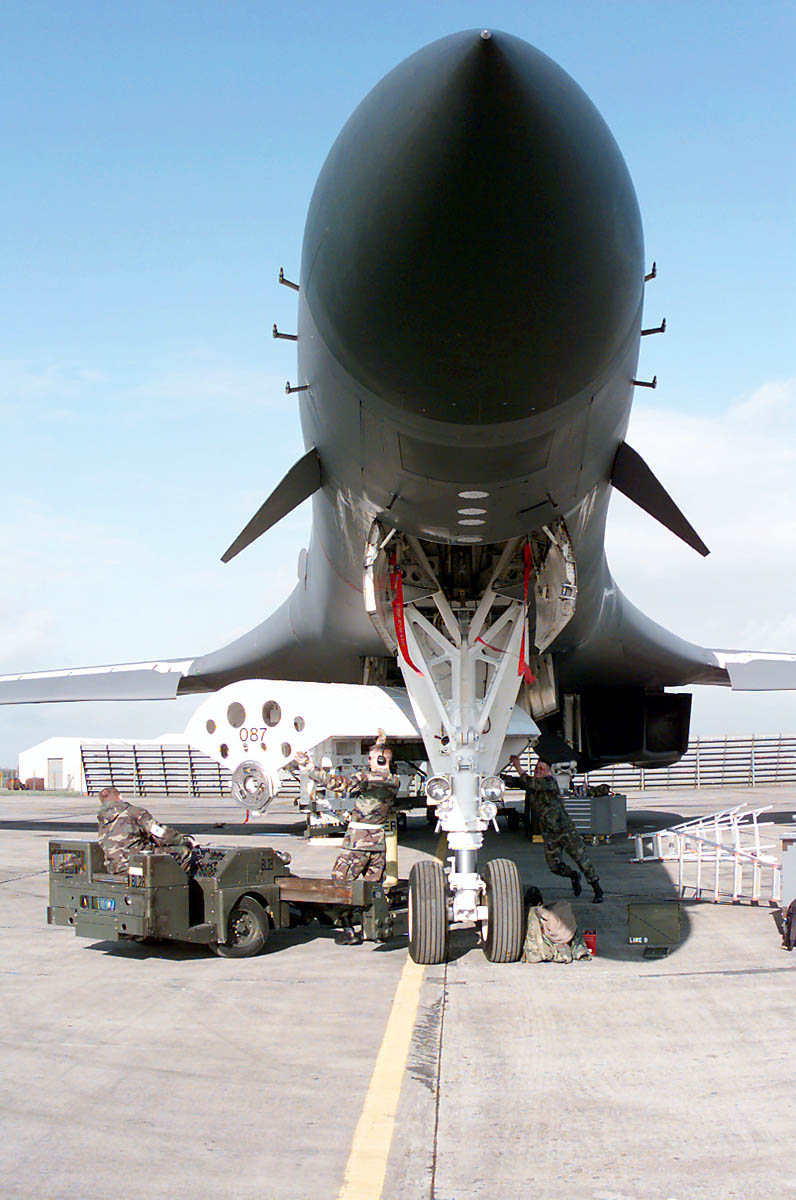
Reconfiguring

ROYAL AIR FORCE FAIRFORD, England -- A munitions load crew places a conventional module bomb rack onto a B-1B Lancer long-range strategic bomber here. B-1B Lancers and support personnel from the 28th Bomb Wing at Ellsworth Air Force Base, S.D., are deployed supporting Operation Allied Force.